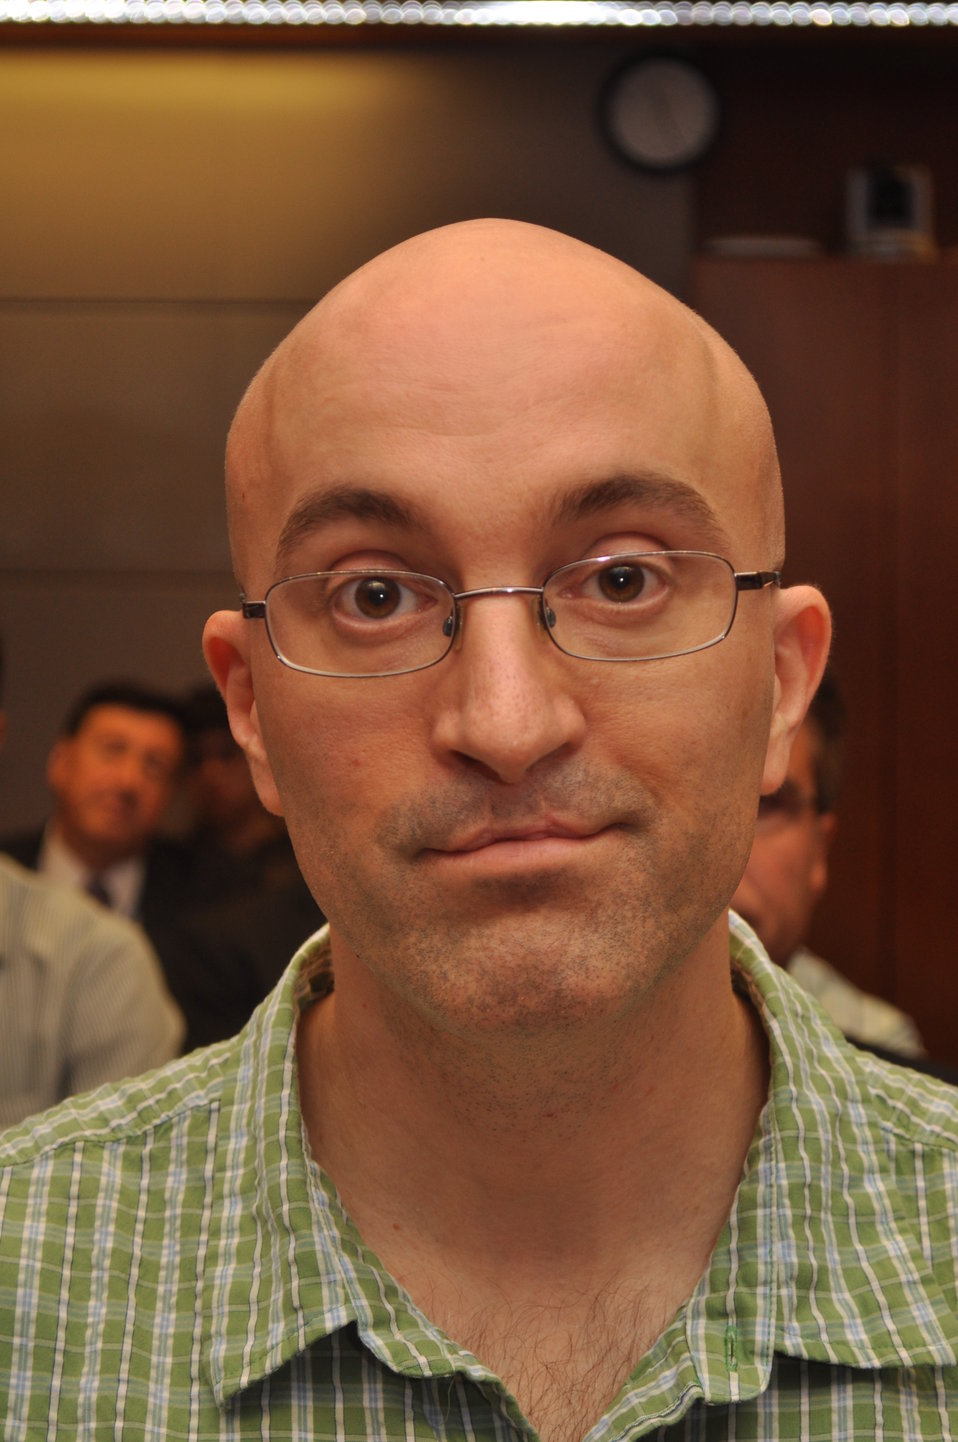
Engineers and Economists

At the August, 2011 Open Meeting the FCC recognized engineers and economists.